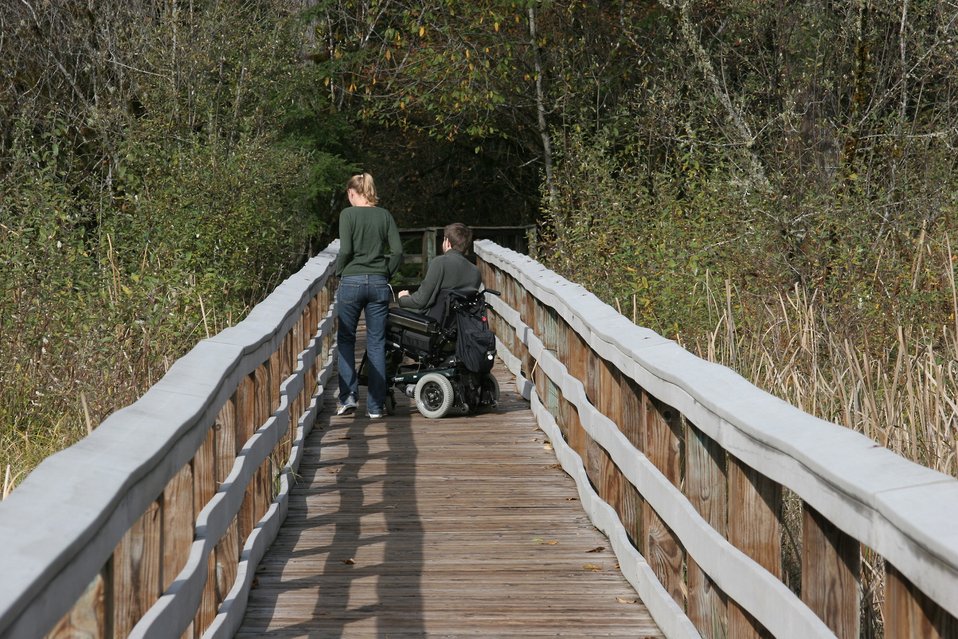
Emily Bubbers and Ian Ruder visit the Wetland Boardwalk Trail at BLM's Wildwood Recreation site near Mt. Hood.